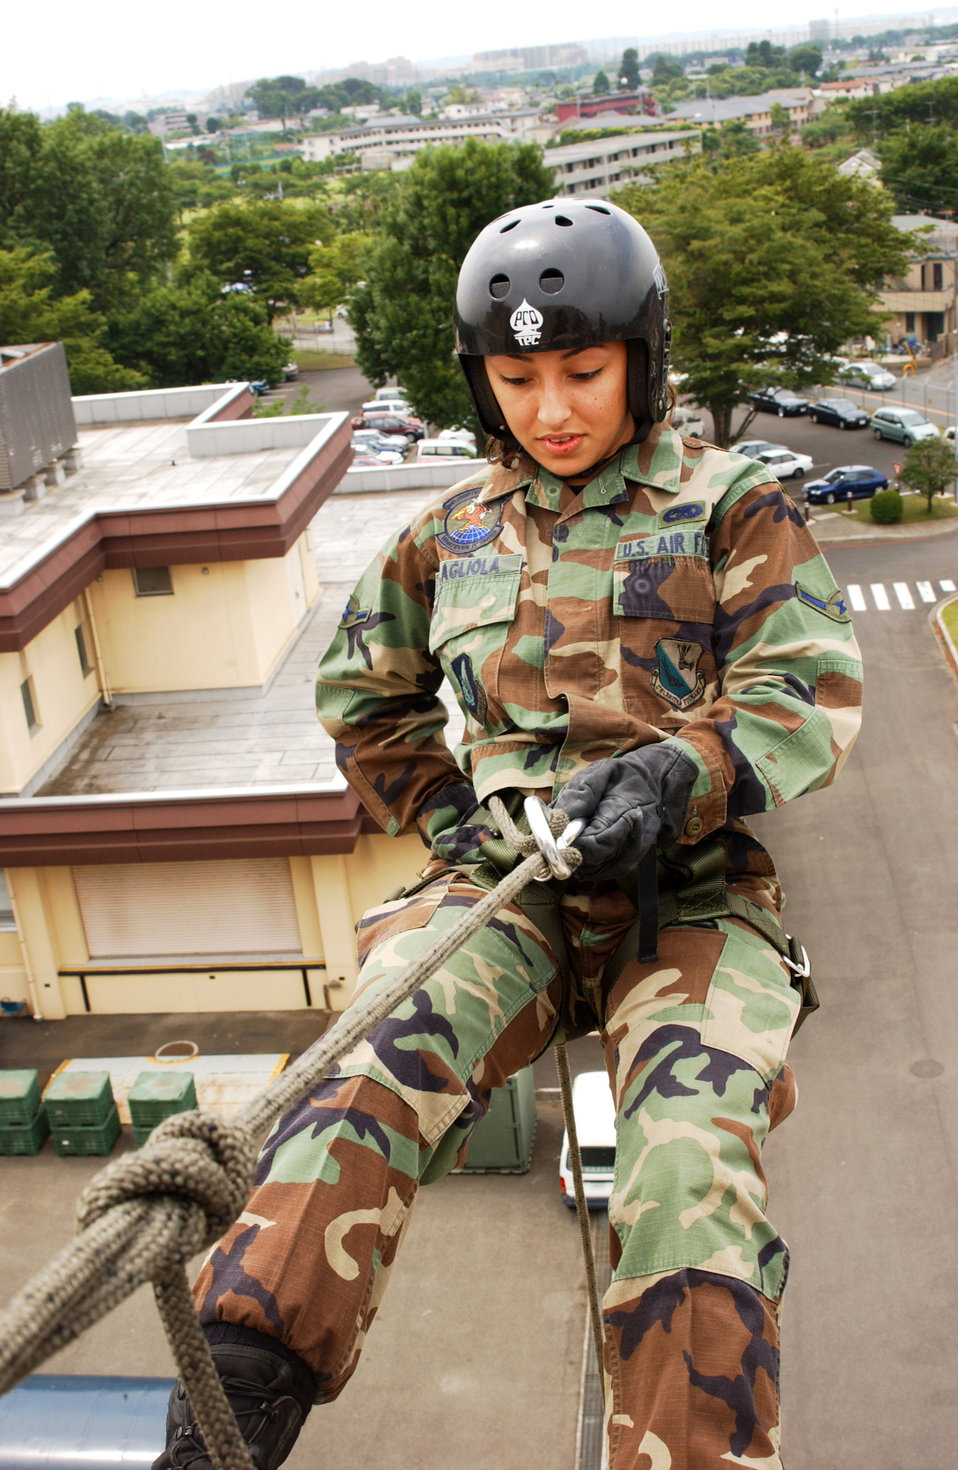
Jump!

YOKOTA AIR BASE, Japan -- Airman Corina Slagliola takes her first step off of the side of a hospital during a monthly rappeling class here. She is assigned to the 374th Logistics Readiness Squadron.